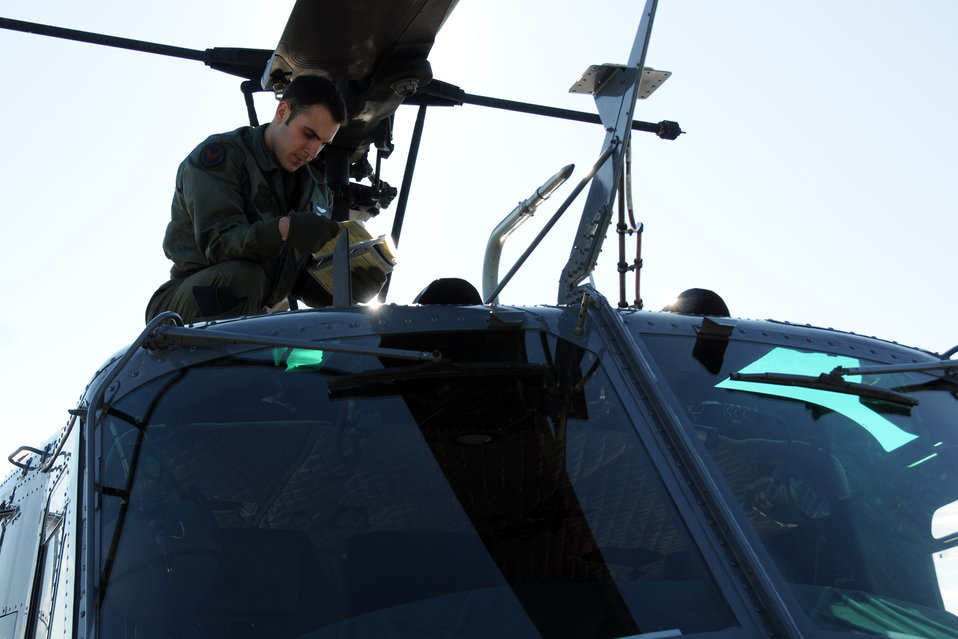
Helicopter training

1st Lt. Michael Scott, a recent graduate from the 23rd Flying Training Squadron at Fort Rucker, Ala., checks his pre-flight inspection book before takeoff. The 23rd FTS is the third and final phase of undergraduate pilot training before student helicopter pilots can obtain their wings. It is the Air Force's primary source of helicopter pilot training for special operations, combat search and rescue, missile support and distinguished visitor airlift missions.